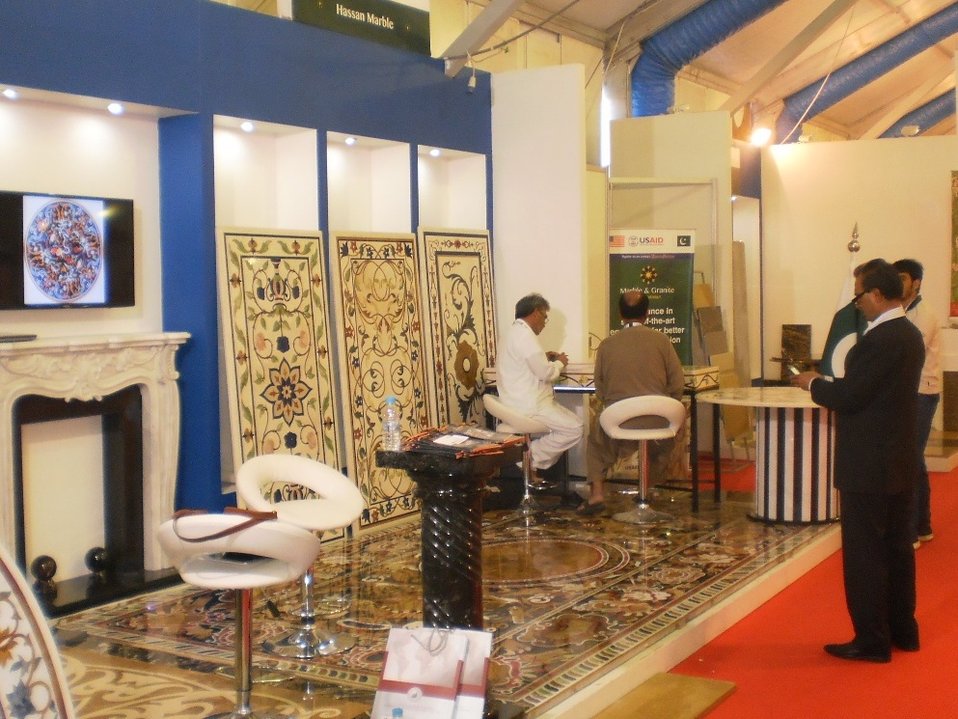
USAID Firms Project Marble and Granite sector participates in the BIG 5, largest construction show of Saudi Arabia

A significant achievement of the visit was partnership with a local buying agent in Saudi Arabia for the marble processors and mosaic manufacturers. As a result of this partnership, a warehouse and showroom will be established, featuring Pakistani products readily available for the market in Saudi Arabia